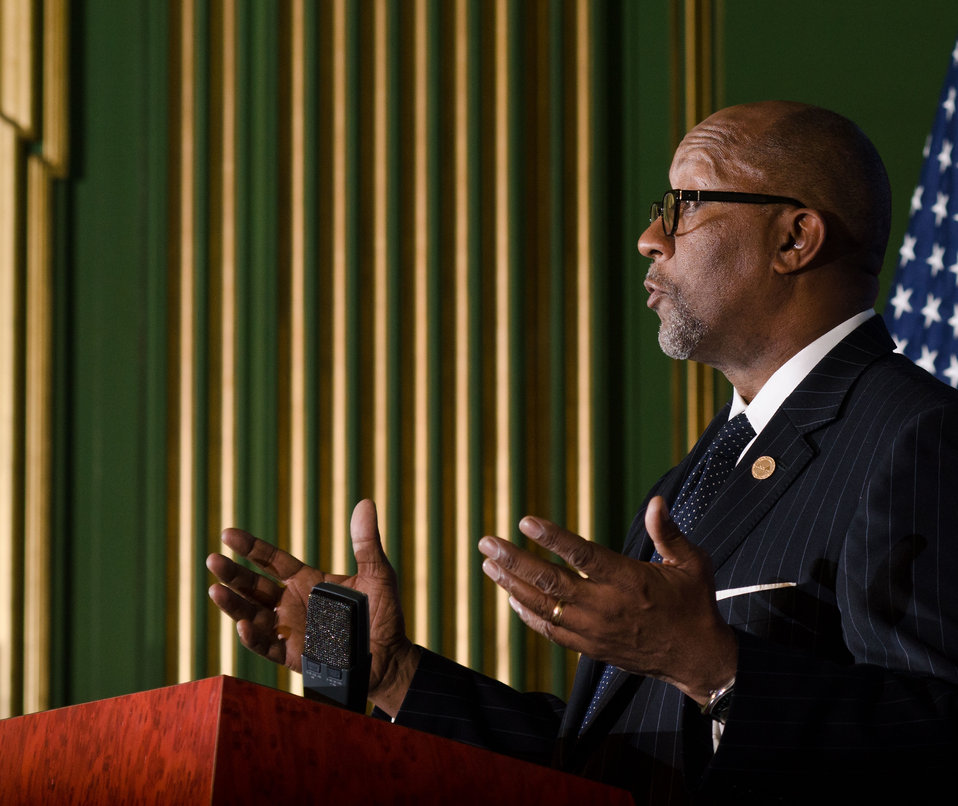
U.S. Trade Representative Ron Kirk responds to a question from international news media journalists at the 23rd Session of the U.S. China Joint Commission on Commerce and Trade (JCCT) at the Andrew W. Mellon Auditorium in Washington, D.C. on Wednesday, Dec. 19, 2012. The JCCT holds high-level plenary meetings on an annual basis to review progress made by working groups that focus on a wide variety of trade issues. These working groups meet throughout the year to address topics such as intellectual property rights, agriculture, pharmaceuticals and medical devices, information technology, tourism, commercial law, environment, and statistics.